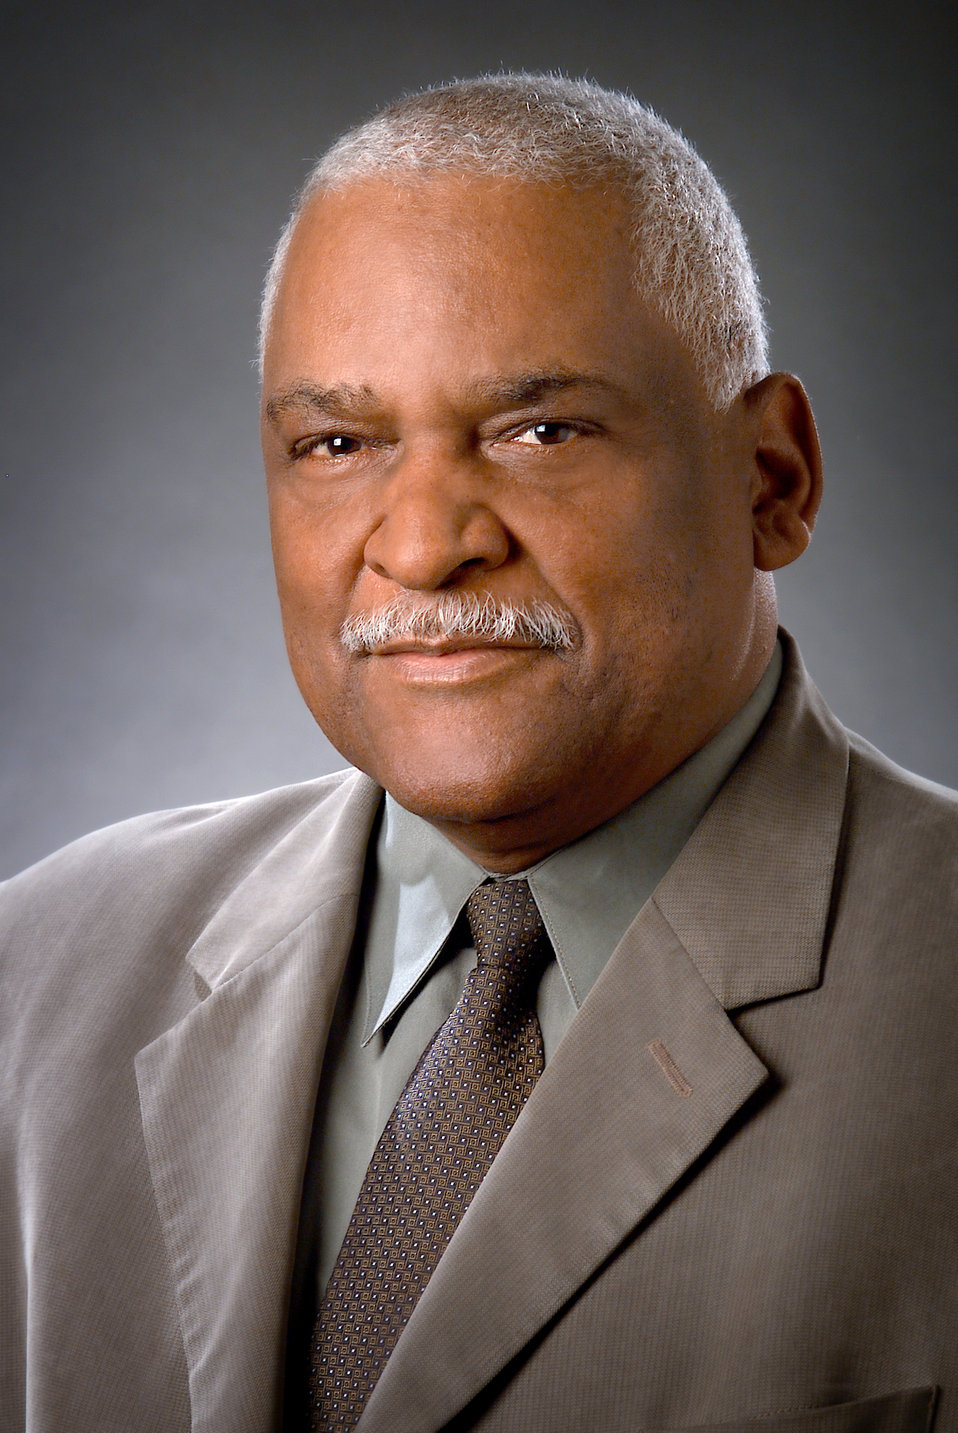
This is Mr. Joseph R. Carter, Deputy Chief Operating Officer, Office of the Chief Operating Officer, CDC/ATSDR, 2004.